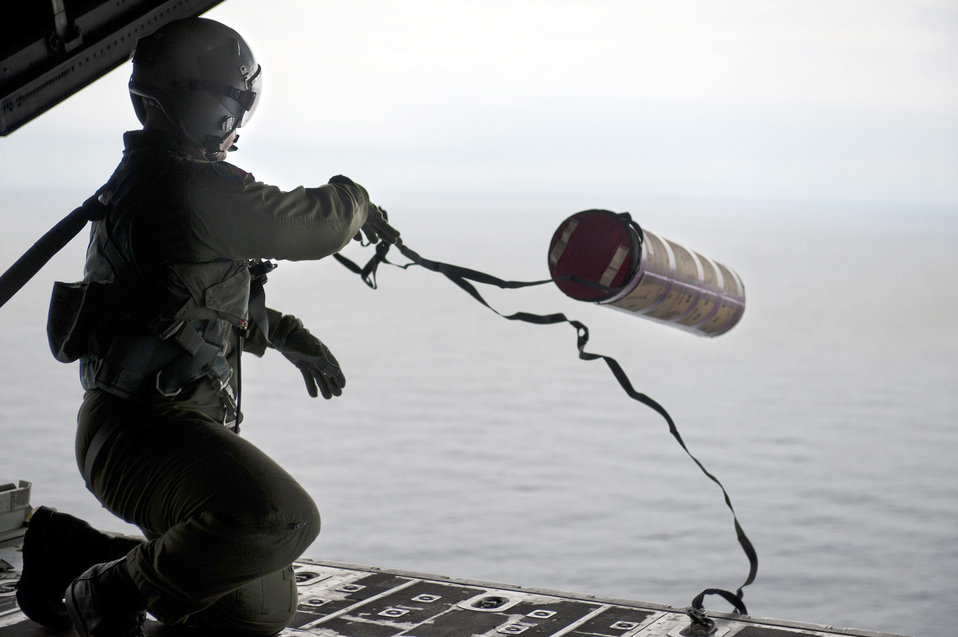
Monitoring ocean currents

Staff Sgt. Blake Landry deploys a buoy from a C-130 Hercules April 29, 2011, off the eastern coast of Japan. Sergeant Landry is a loadmaster assigned to the 36th Airlift Squadron at Yokota Air Base, Japan.